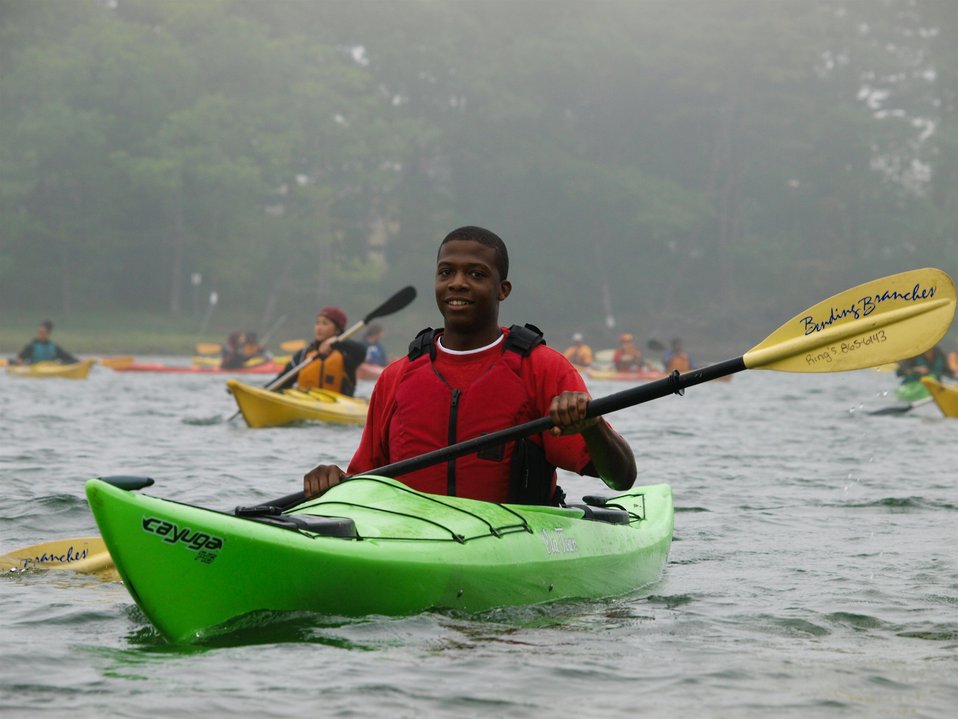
Kayak Trip